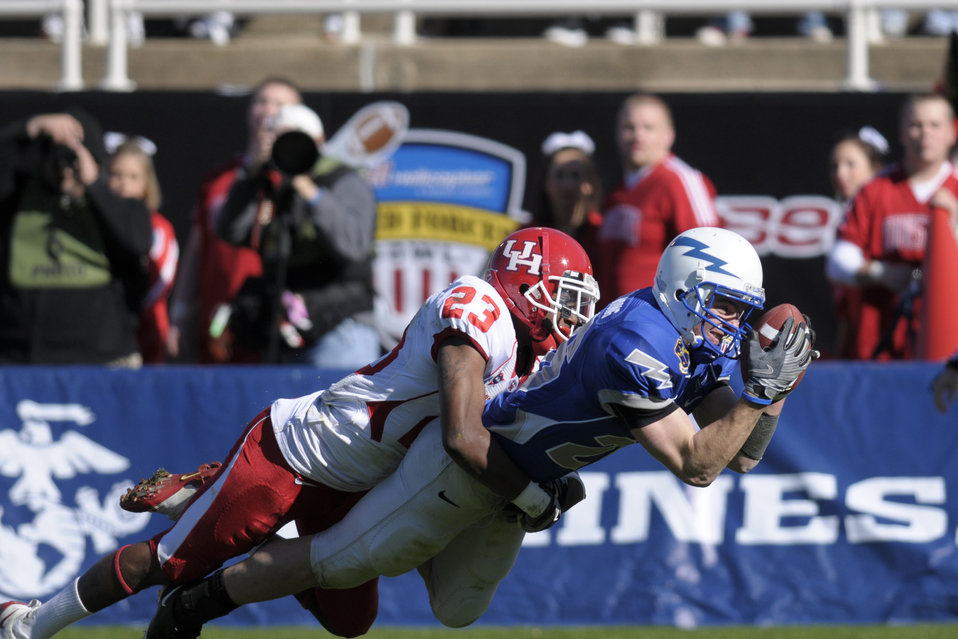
Air Force falls to Houston at Armed Forces Bowl, 34-28

U.S. Air Force Academy wide receiver Spencer Armstrong pulls in a long bomb for a 46-yard gain during the Bell Helicoptor Armed Forces Bowl Dec. 31. Only the tackle of University of Houston safety Carson Blackmon kept Armstrong out of the end zone on this play. Houston beat the Air Force Academy, 34-28.